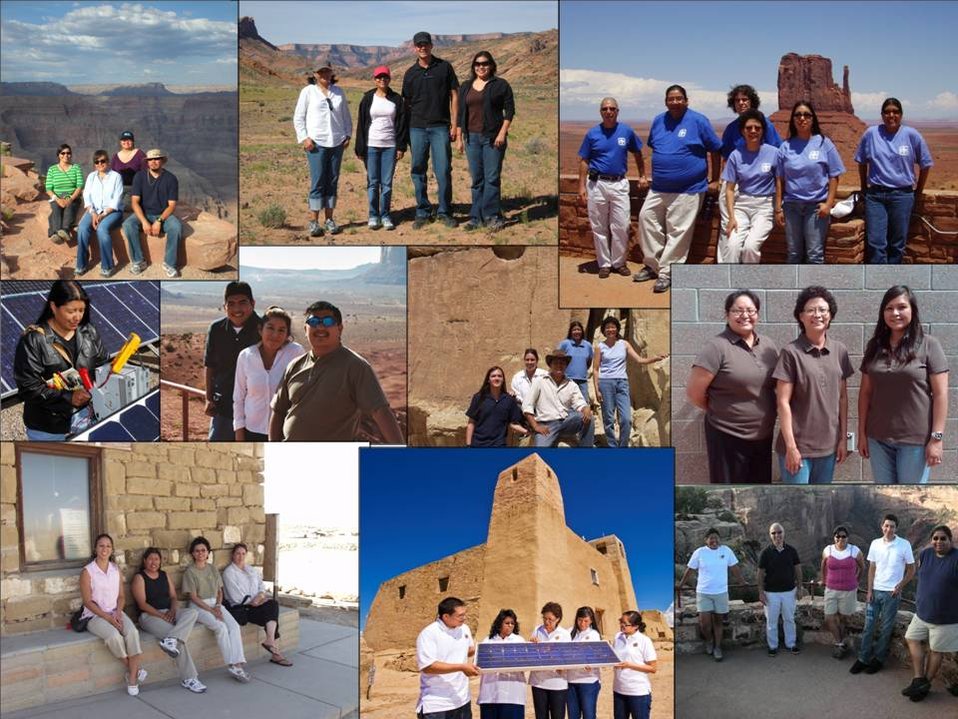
Tribal Energy Internship Program 2002-2011 participants

This summer, the DOE Tribal Energy Internship Program Celebrates 10 years of success.